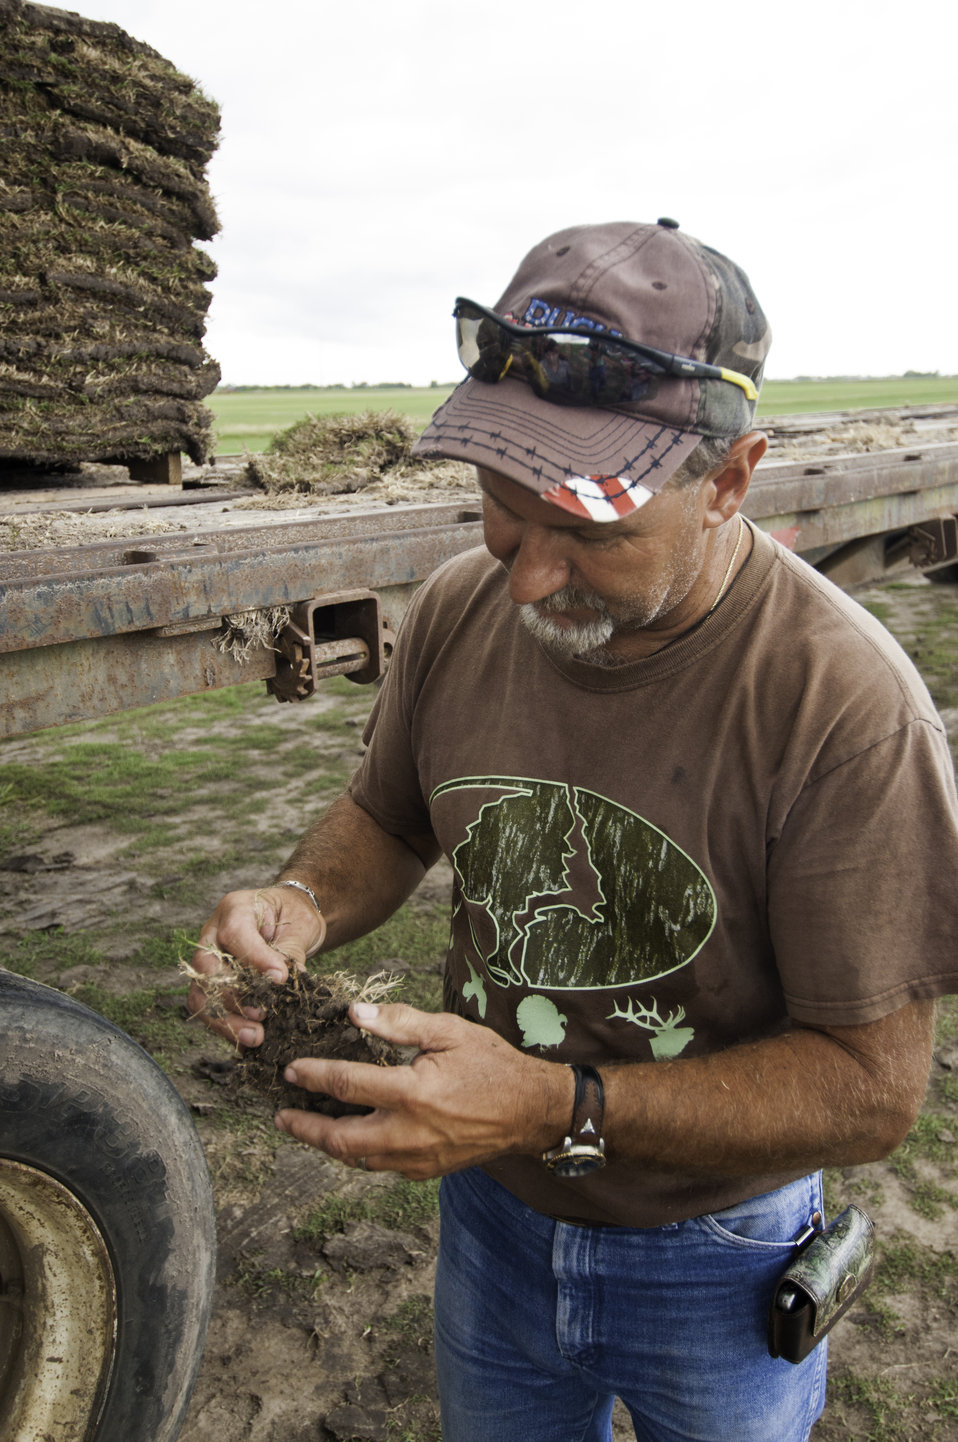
Quality Turf Farms owner Boston Brown checks the quality of the roots of the sod harvested on his turf farm in Guy, TX on Aug. 23, 2013.